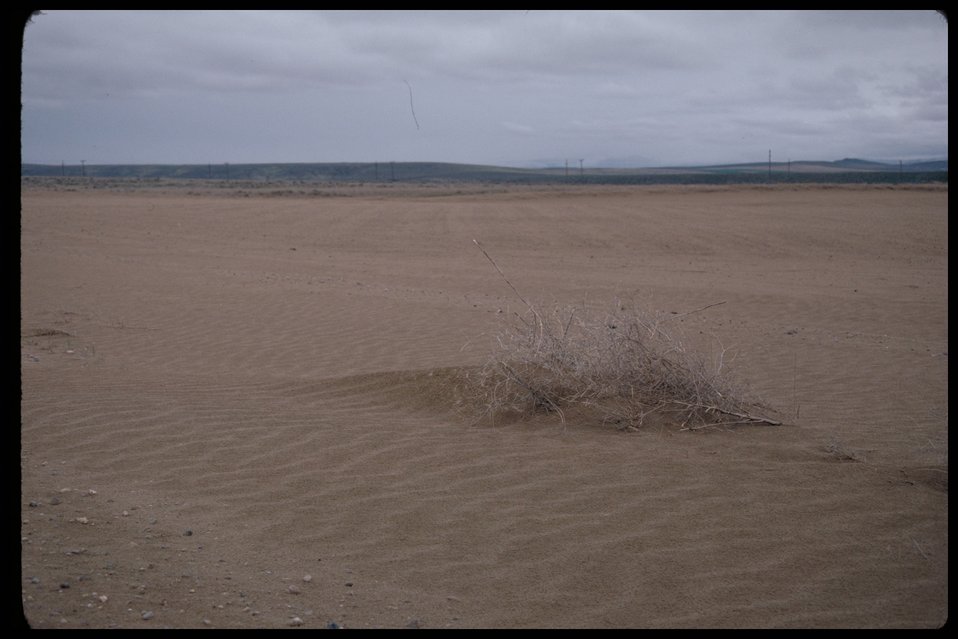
Desertification near BOP Agriculture Birds of Prey National Conservation Area Owyhee Field Office LSRD Lower Snake River District